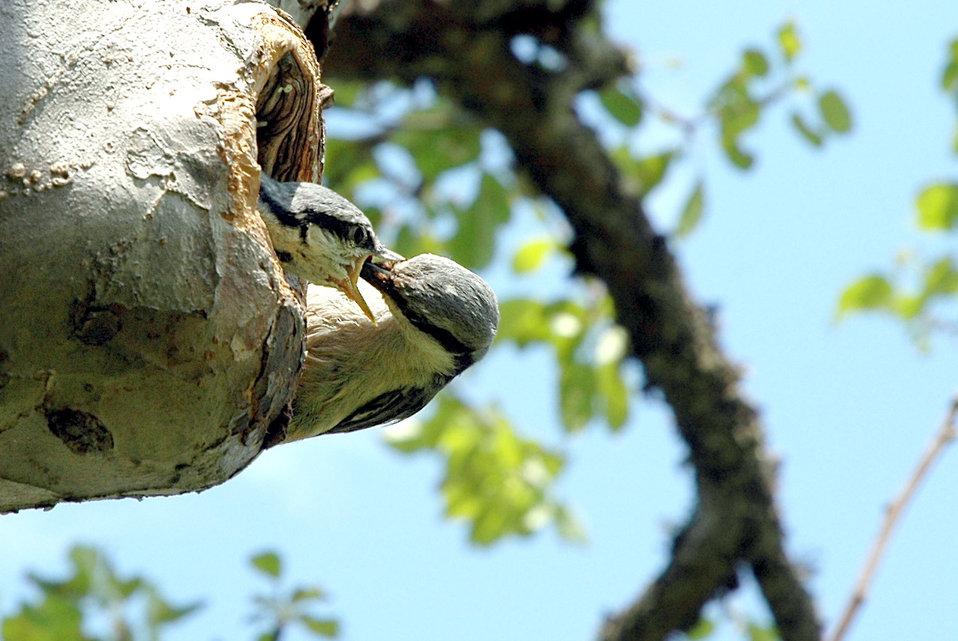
Bird feeding.